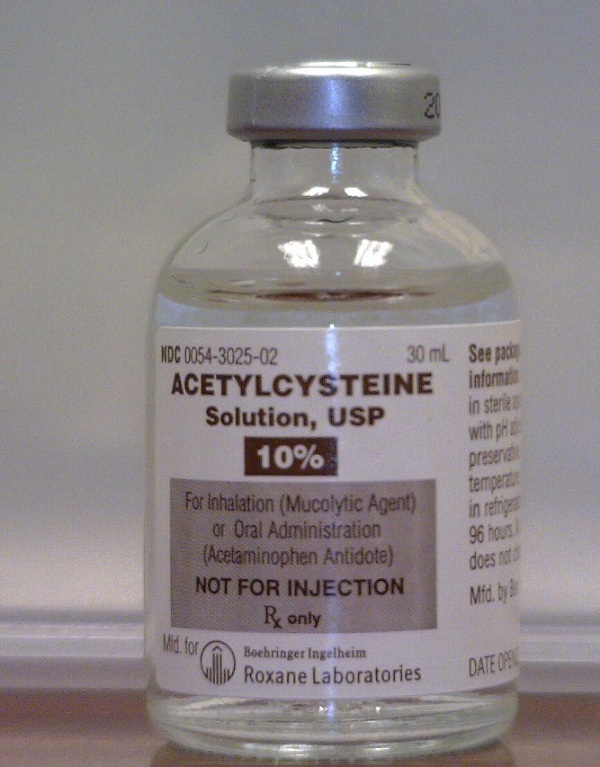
RECALLED – Acetylcysteine Solution 10%, USP

February 14, 2014 – Product Recall – Ben Venue Laboratories, Inc. Issues A Voluntary Nationwide Patient Level Recall Of Acetylcysteine Solution 10%, Usp, Lot 2005479.